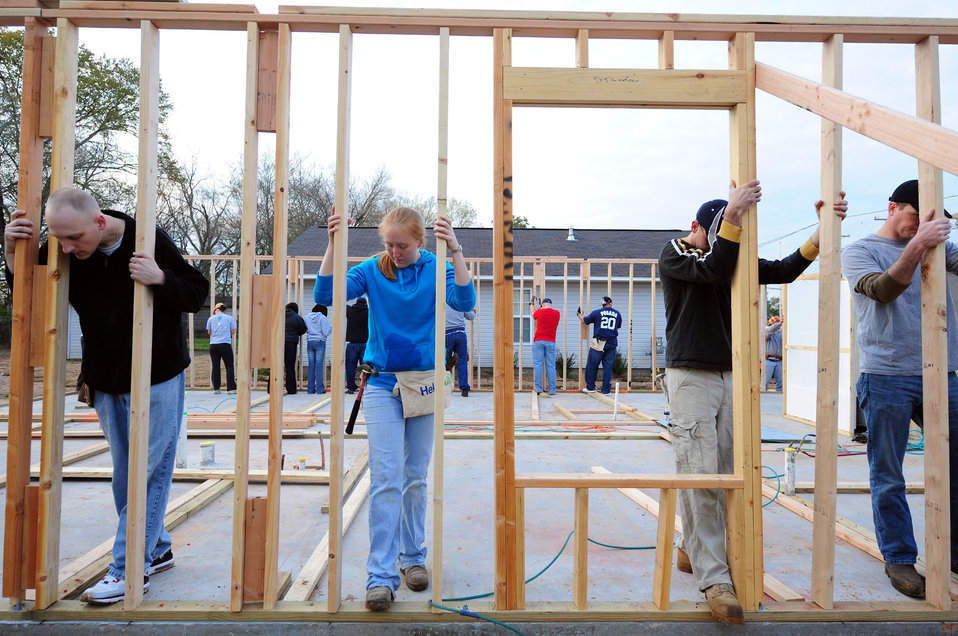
Barksdale Airmen build homes for needy families

Airmen from the 2nd Civil Engineer Squadron at Barksdale Air Force Base, La., hold an exterior wall in place so it can be secured during the first day of construction on a Habitat for Humanity home March 20, 2010, in Shreveport, La. The home is being constructed for the Harts, a family from New Orleans who relocated to Shreveport following Hurricane Katrina.